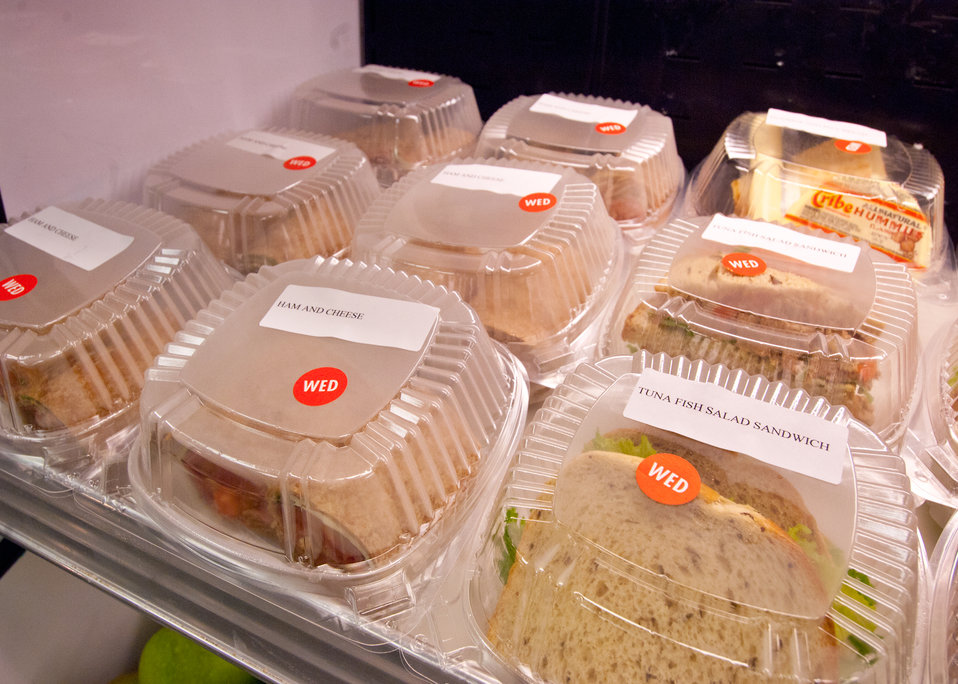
Healthy meal choices of ham and cheese wraps and tuna fish sandwiches at Washington-Lee High School in Arlington, Virginia for lunch service Wednesday, October 19, 2011. The sandwiches and wraps are available through the National School Lunch Program. The National School Lunch Program is a federally assisted meal program administered by the United States Department of Agriculture, Food and Nutrition Service operating in public, nonprofit private schools and residential child care institutions. It provides nutritionally balanced, low-cost or free lunches to children each school day.